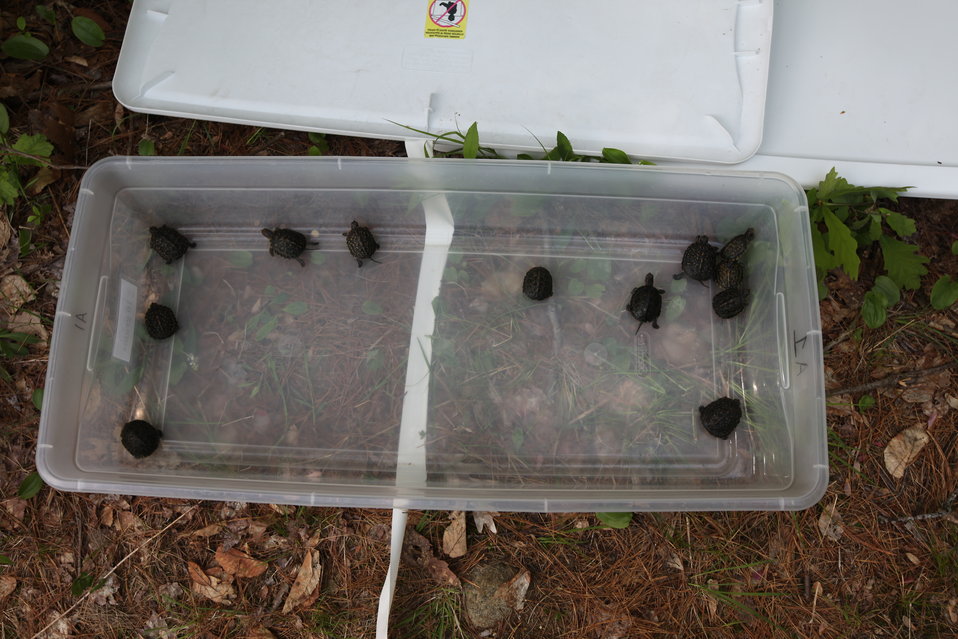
Turtles Ready to be Released

Blanding's turtle release, Assabet River, MA.